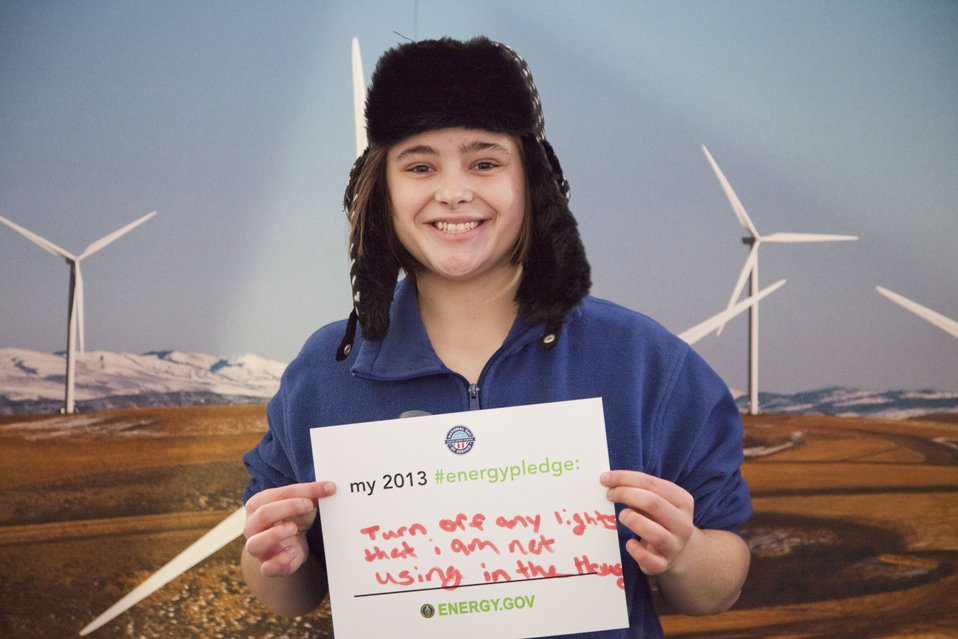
What's your #energypledge?